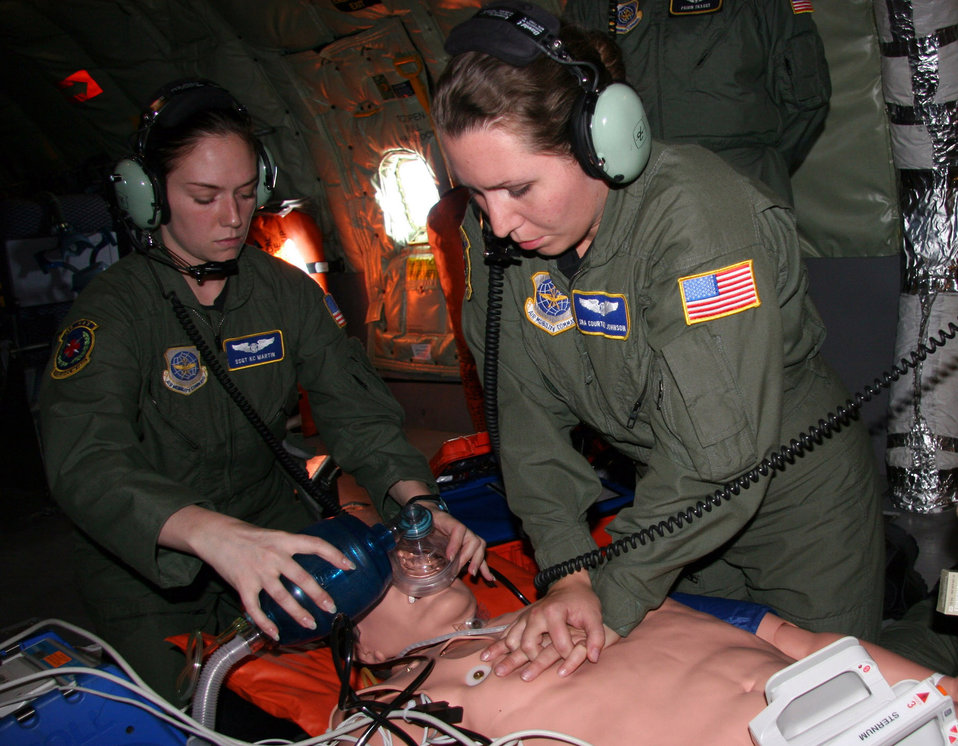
Medevac training

OVER THE PACIFIC OCEAN (AFPN) -- Medical technicians Staff Sgt. K.C. Martin (left) and Senior Airman Courtney Johnson practice their advanced cardiac life support skills on a dummy. The training took place aboard a KC-135 Stratotanker aircraft leaving Marine Corps Base Kaneohe Bay, Hawaii. Sergeant Martin and Airman Johnson are with the 349th Aeromedical Evacuation Squadron at Travis Air Force Base, Calif. They took part in three days of training at the Marine base. The tanker is from the Reserve's 939th Air Refueling Wing at Portland International Airport, Ore.